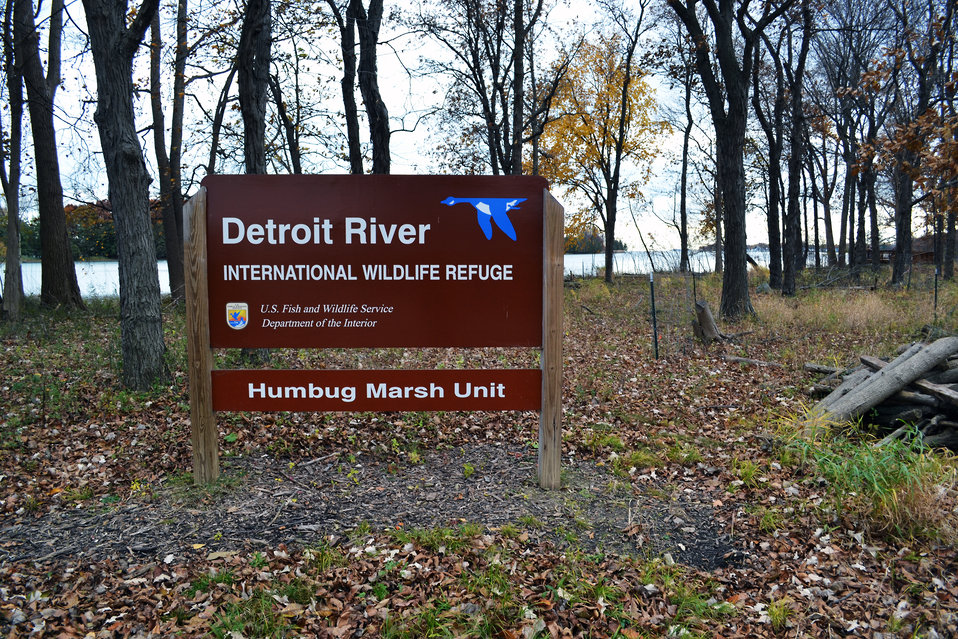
Beautiful backdrop

Detroit River International Wildlife Refuge groundbreaking celebration.